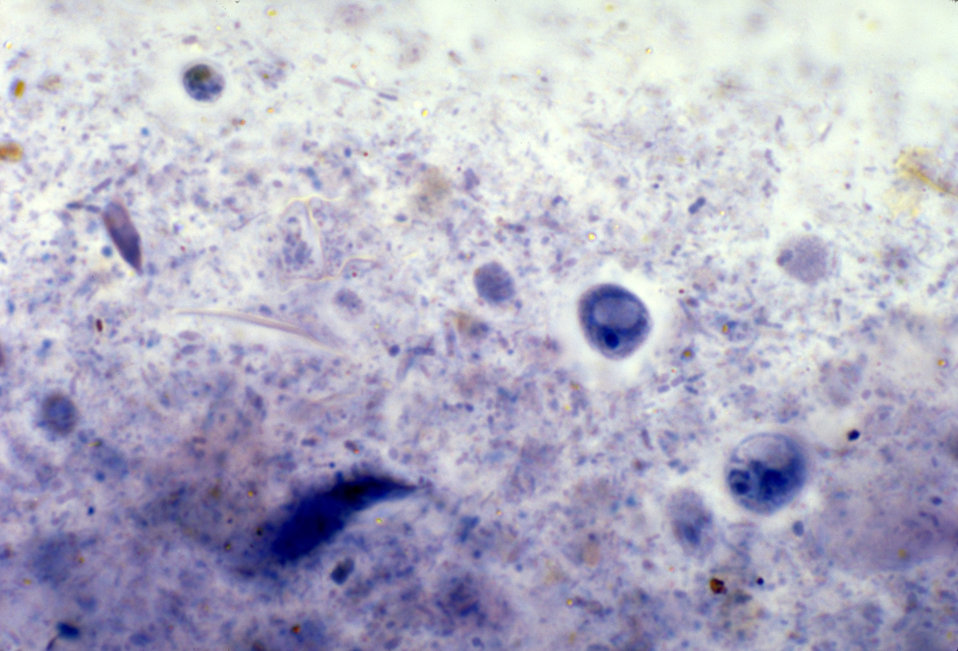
This photomicrograph depicts a number of cysts of the Iodamoeba b�ii amoebic parasite.